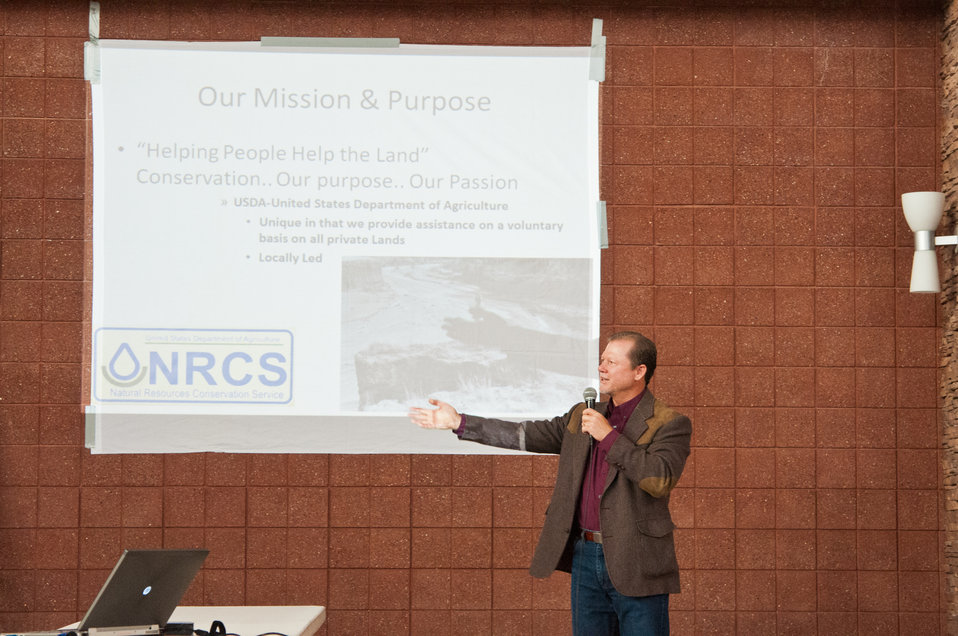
U.S. Department of Agriculture (USDA) Natural Resources Conservation Service (NRCS) Northwest New Mexico Area Conservationist Steve Kadas speaks to community and tribal members during a Conservation Planning Meeting showcasing conservation programs offered by USDA was held at the Jicarilla Apache Nation in Dulce, NM on Wednesday, Jun. 12, 2013.